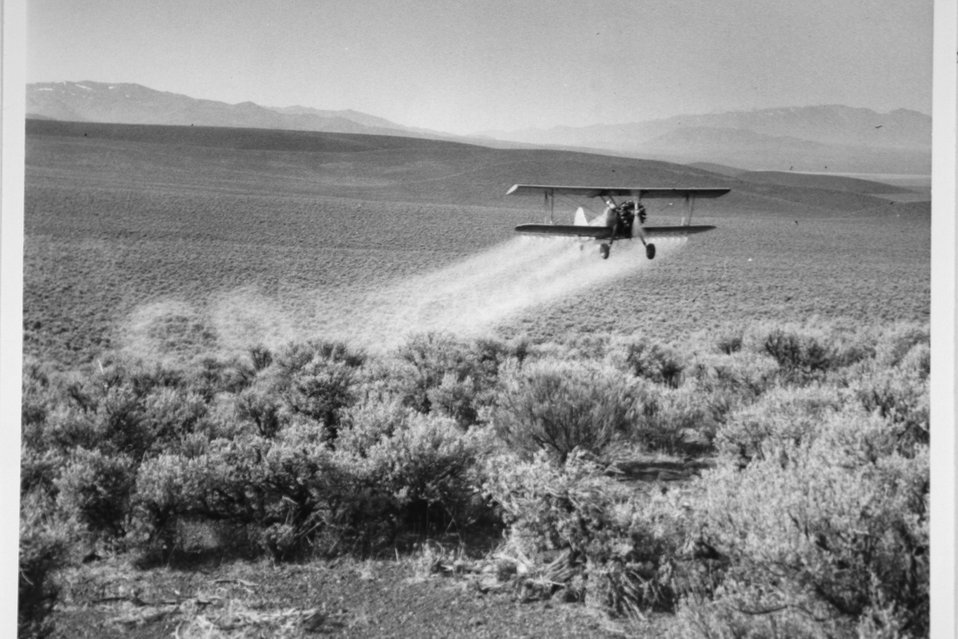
Spraying Antelope Springs sagebrush 1966